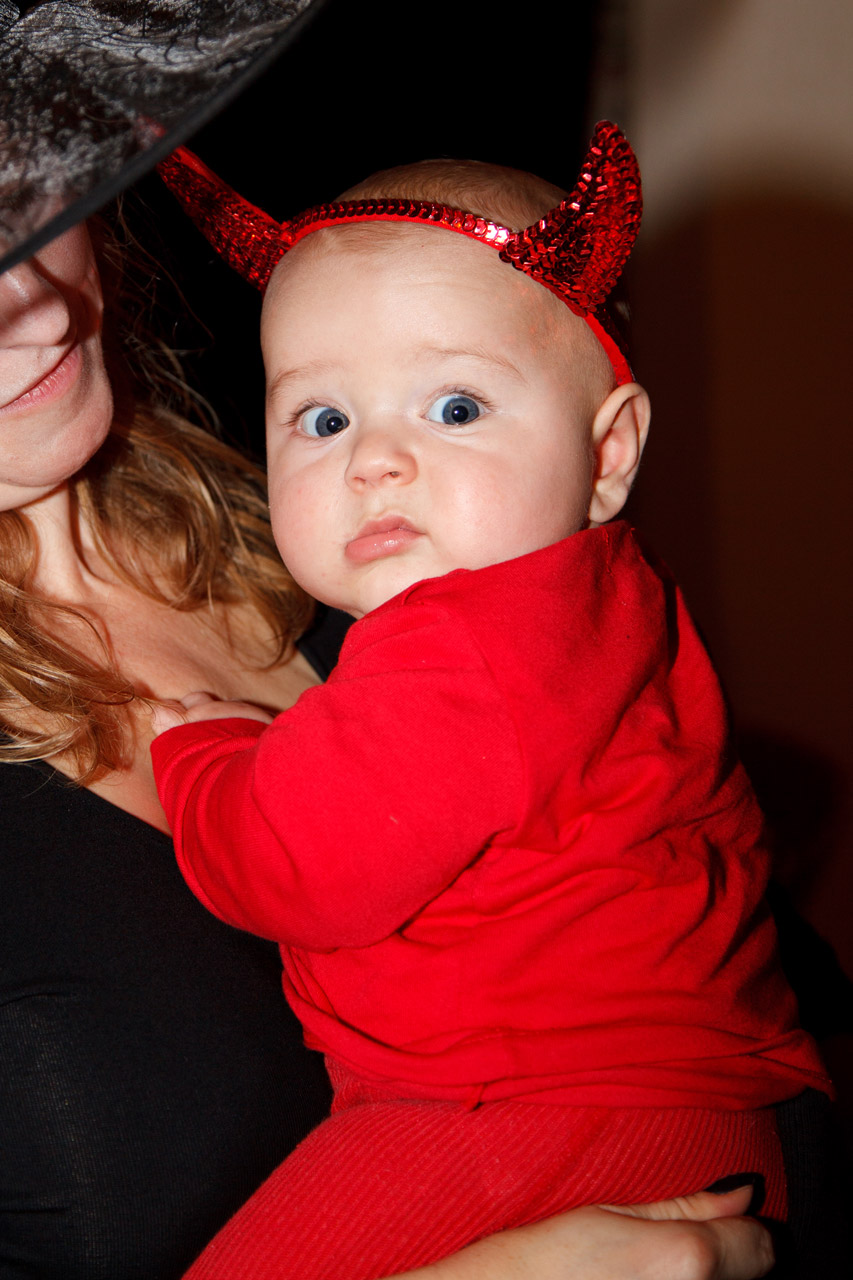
Baby devil

Cute baby devil with funny expression.